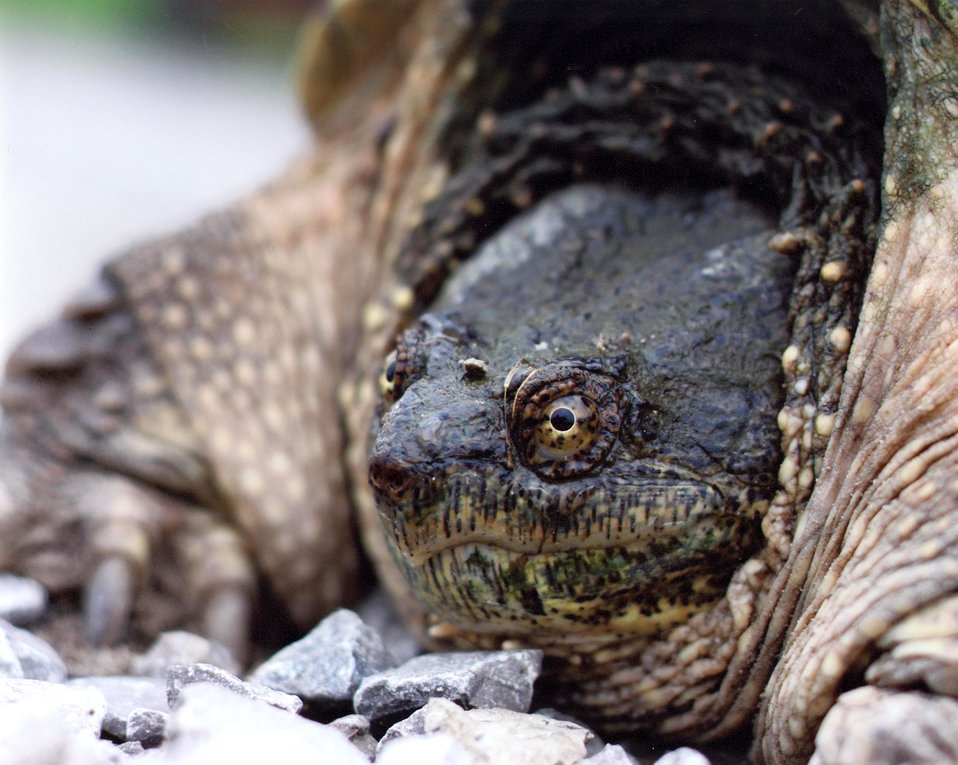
Between a Rock and a Hard Case

Photo by Thomas Itoney/USFWS.

Shiawassee National Wildlife Refuge 2013 Photo Contest